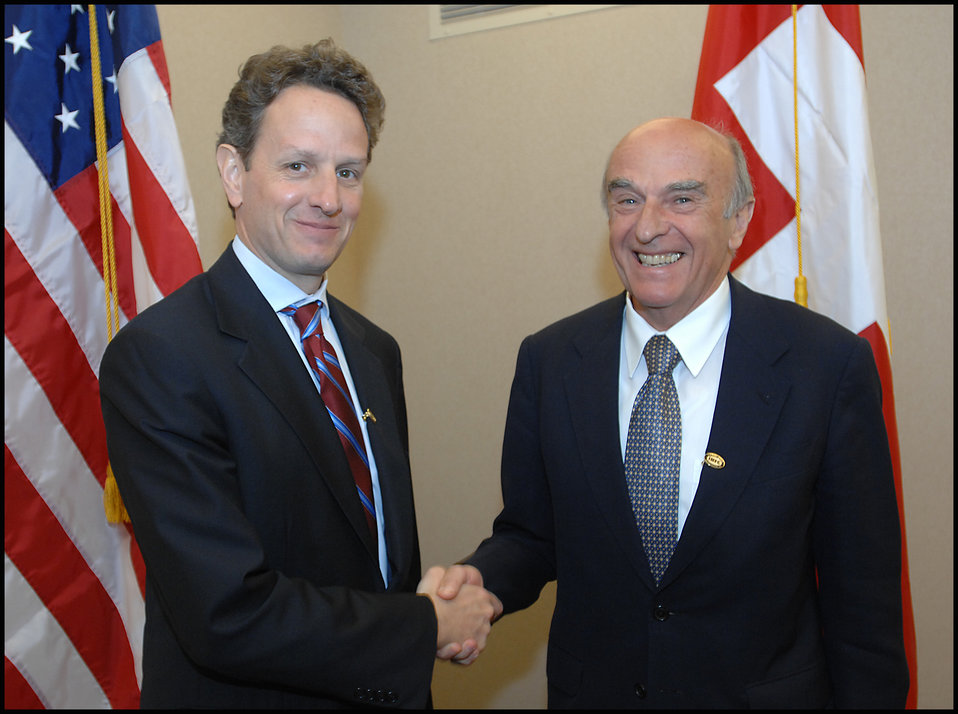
Swiss President and Finance Minister Merz at the IMF

On April 25, 2009, Secretary Geithner conducted a bilateral meeting with Swiss President and Finance Minister Merz at the IMF.